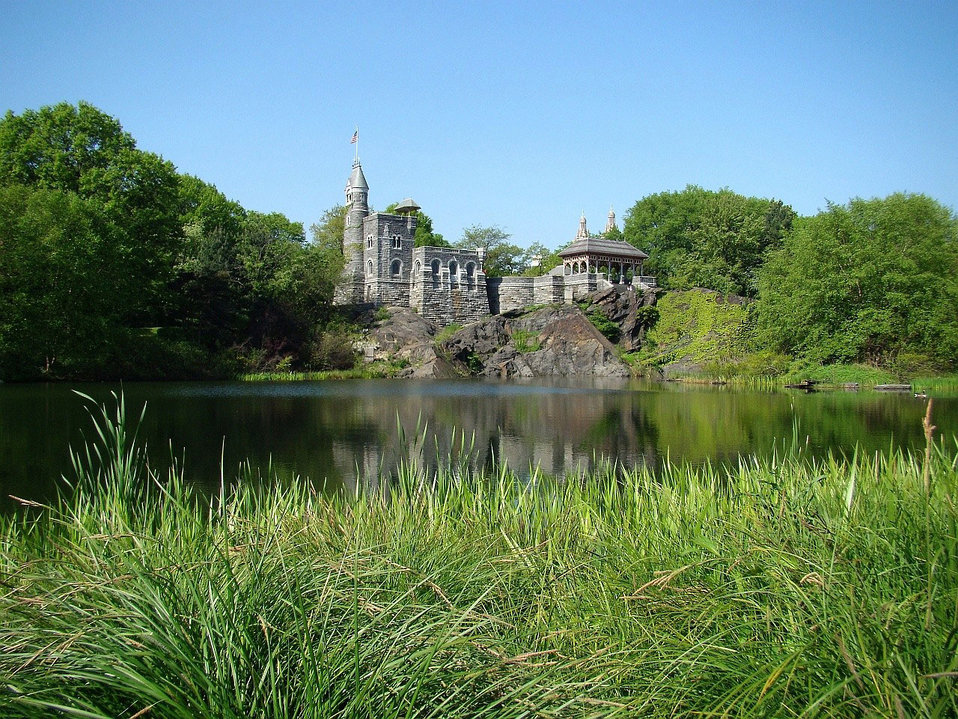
Belvedere castle

Castle in central park.